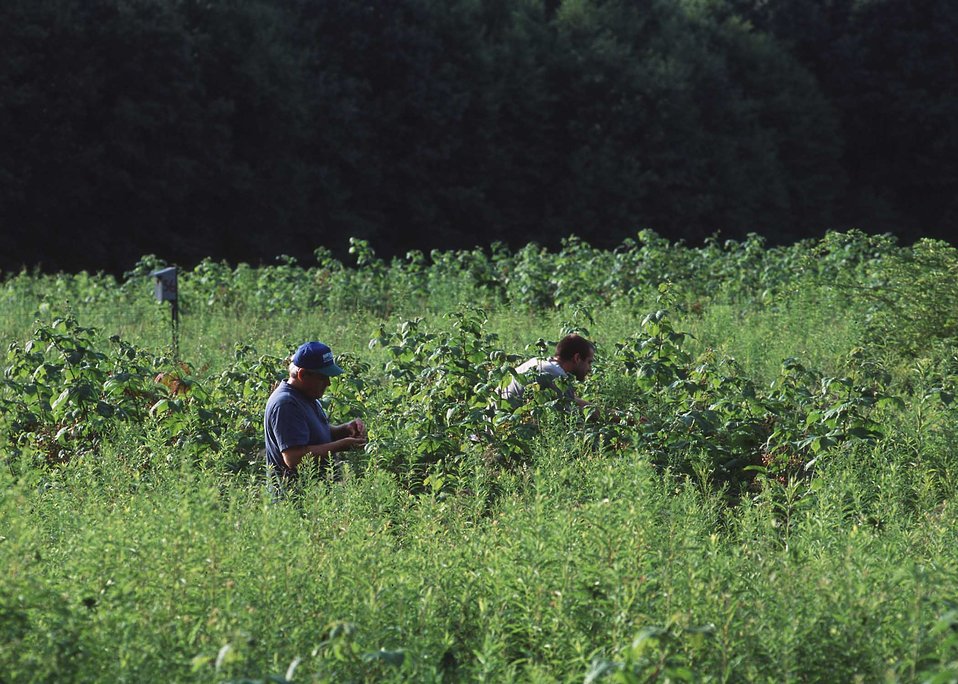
NRCS Conservationist, Alan Page conducting an early successional habitat vegetative inventory with a Hartford County landowner.